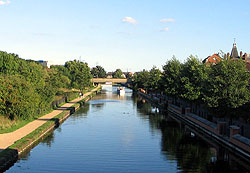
The Lee Navigation from the Eastway Bridge, August 2005.